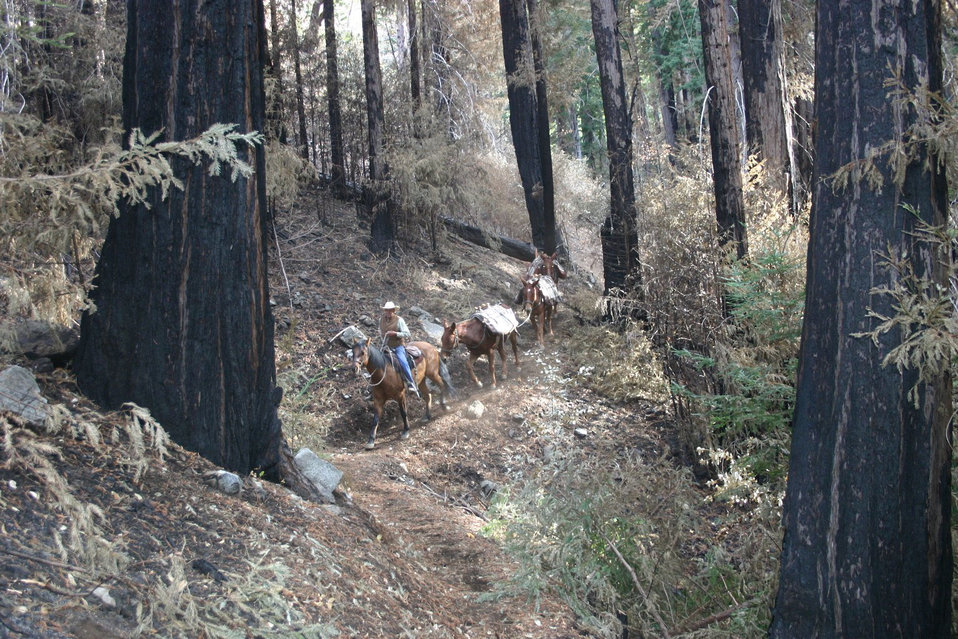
Mule strings on Pine Ridge Trail in the Ventana Wilderness (post fires 2008), on Nov. 21, 2008, in CA.